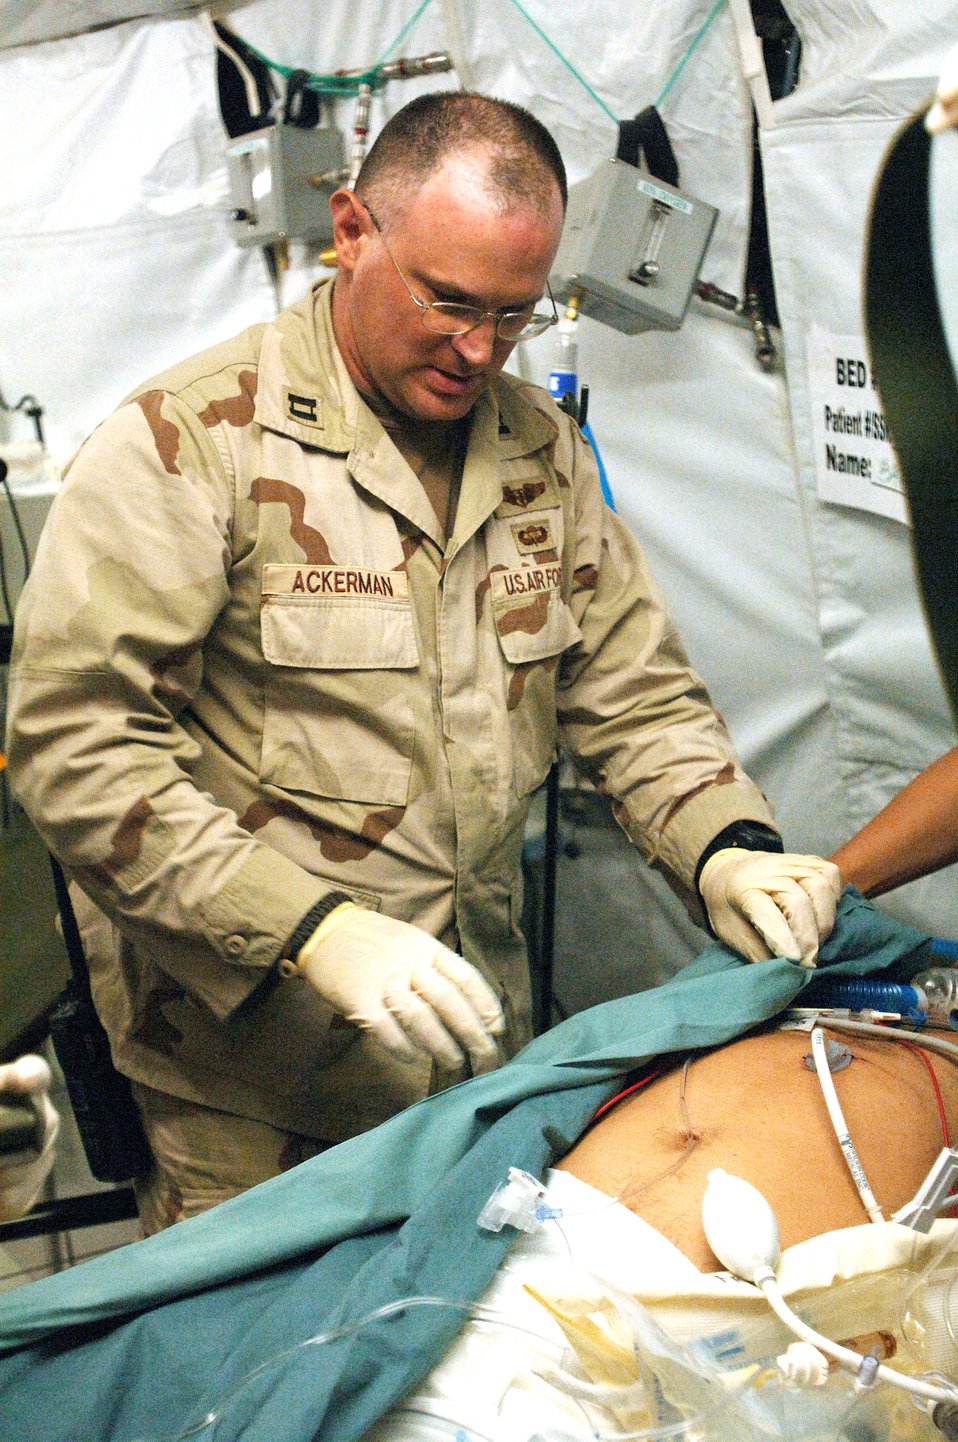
Soldiers, Airmen care for Iraqi patients

BALAD AIR BASE, Iraq -- Capt. Brian Ackerman checks a patient's dressing and equipment to ensure he is ready for flight. His job is to coordinate the movement of critically wounded patients between the Air Force theater hospital here and the contingency aeromedical staging facility. Captain Ackerman is a nurse with the 379th Expeditionary Aeromedical Evacuation Squadron.